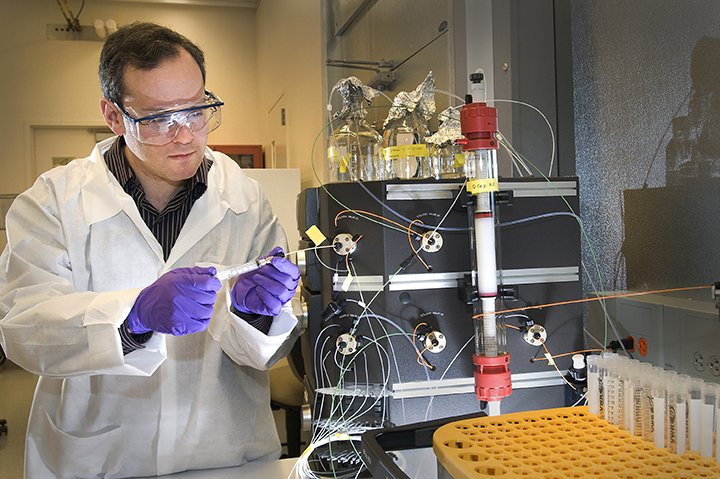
The Materials Synthesis and Characterization Facility at BNL Center for Functional Nanomaterials includes labs devoted to producing nanostructured materials and their basic structural, chemical and optical characterization.